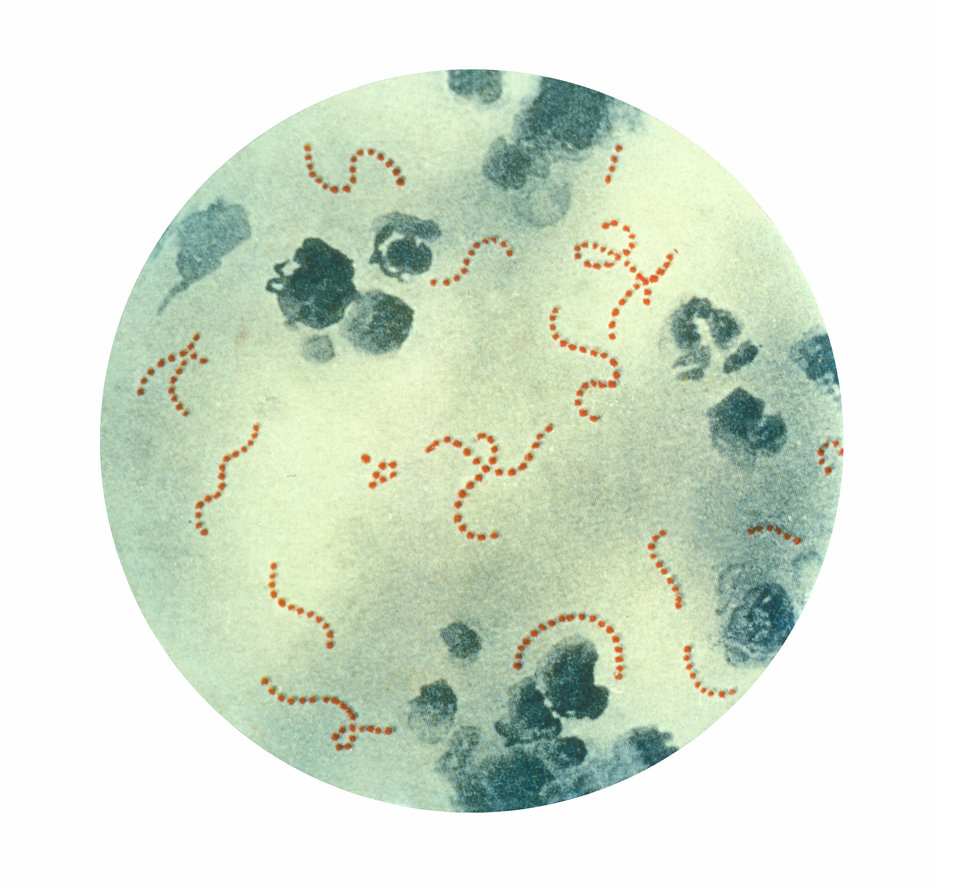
Photomicrograph of Streptococcus pyogenes bacteria, 900x Mag.